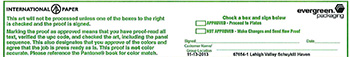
RECALLED – Orange Juice

March 3, 2014 – Product Recall – Lehigh Valley Dairy Conducts Voluntary Recall of Lehigh Valley, Swiss Premium, and Price Chopper Brand Orange Juice Because It May Contain Undeclared Allergen (Milk).